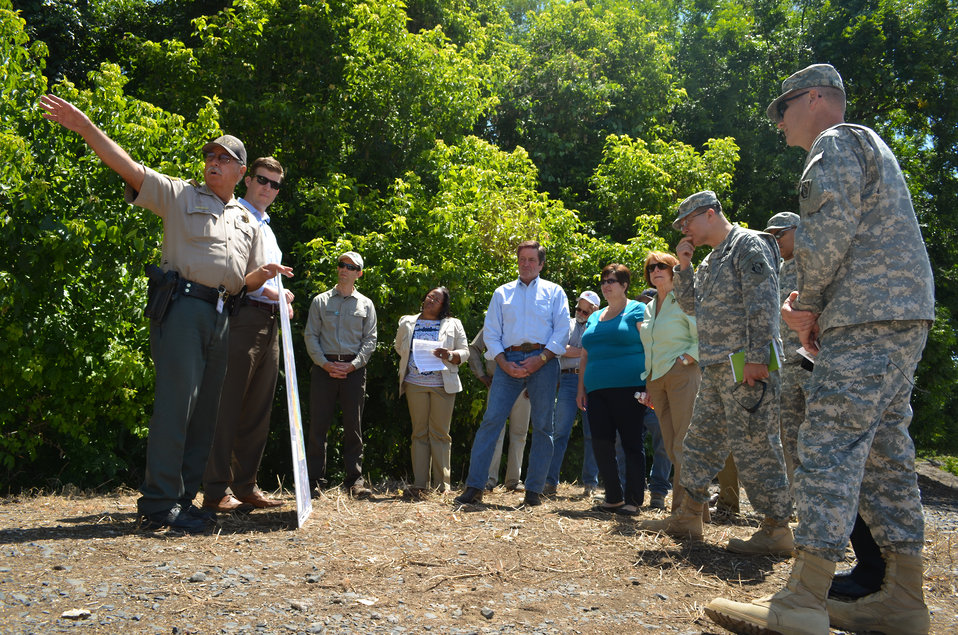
Hamilton City tour-stop on a non-engineered levee built in 1906

Jo-Ellen Darcy, Assistant Secretary of the Army for Civil Works (fourth from right), toured the U.S. Army Corps of Engineers Sacramento District's Hamilton City project June 3, 2014, with U.S. Rep. John Garamendi and Corps leaders as part of Darcy's visit to Corps infrastructure projects in Northern California. The project will let nature help do the work of reducing flood risk for Hamilton City by restoring 1,500 acres of native habitat between the Sacramento River and a new setback levee to be built near the town. (U.S. Army photo by Todd Plain/Released)

From right: Col. Michael Farrell, Sacramento District Commander; Brig Gen. David Turner, South Pacific Division Commander; Maj. Gen. John Peabody, Deputy Commanding General for Civil and Emergency Operations; the Honorable Jo-Ellen Darcy; Lee Ann Grigsby-Puente, Reclamation District 2140 president; and U.S. Rep. John Garamendi.